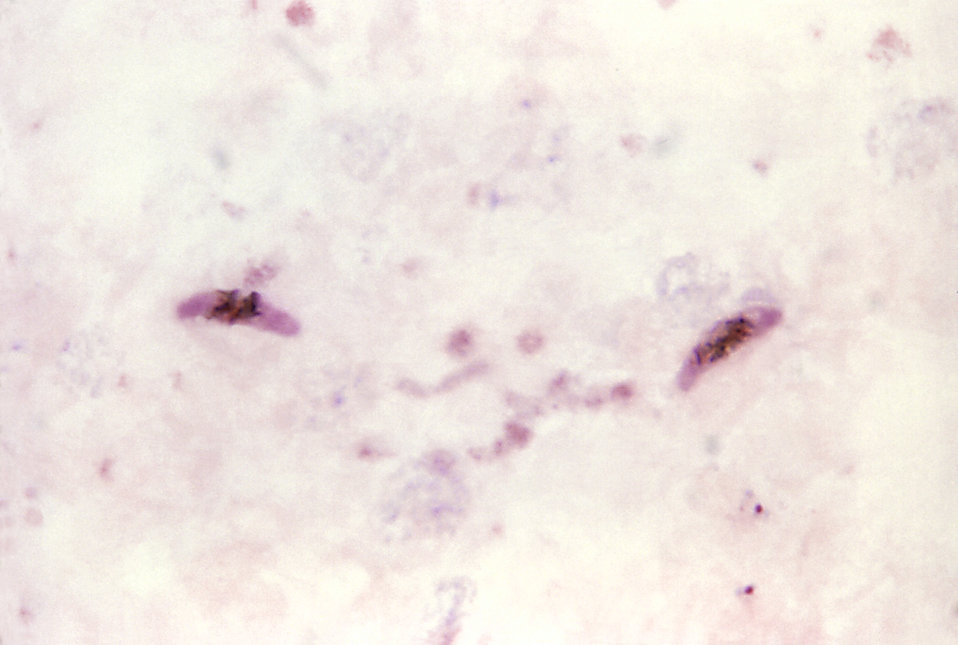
This thick film micrograph reveals two elongated Plasmodium falciparum gametocytes with pinkish cytoplasm.